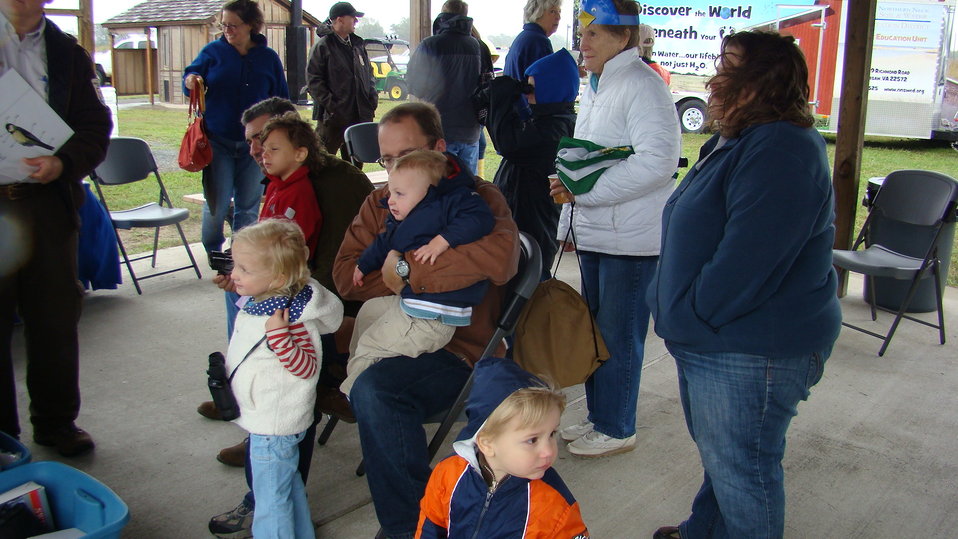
Rappahannock River Valley NWR 15th Anniversary

'Go Wild!' attendees participate in a birding activity.